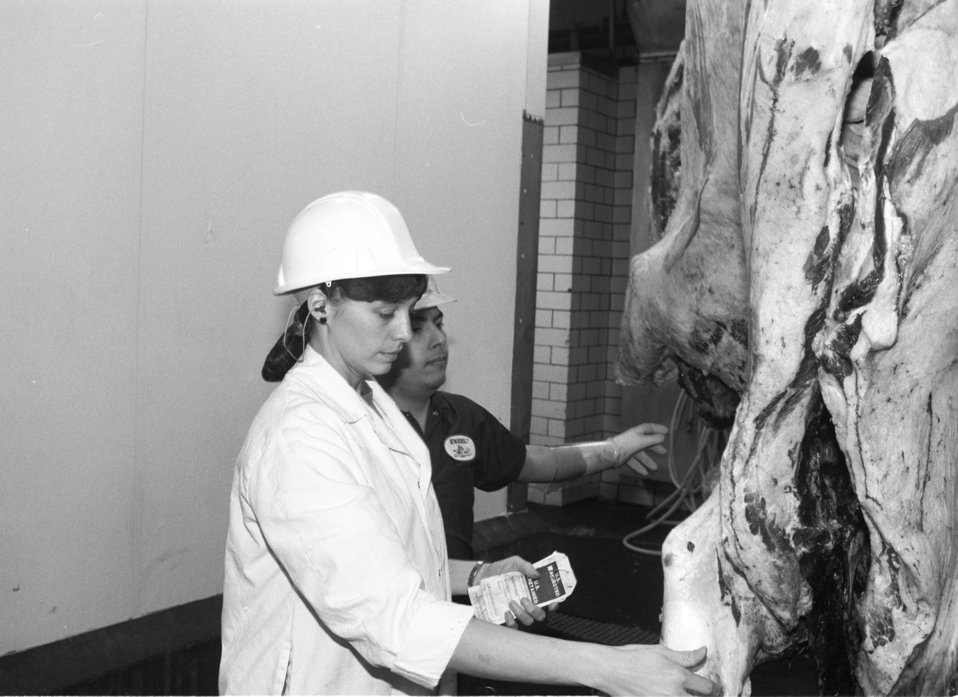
U.S. Department of Agriculture (USDA) Food Safety Inspection Service (FSIS) inspectors inspect beef using a Streamline Inspection System (SIS) at a processing plant in Plainview, TX on January 22, 1991.